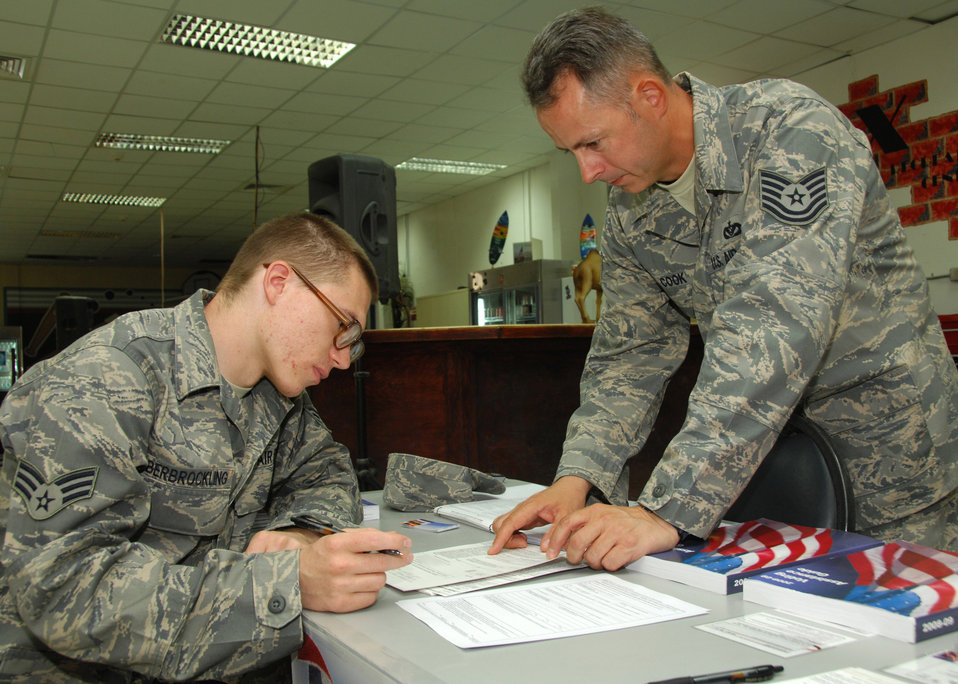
Every vote counts

Tech. Sgt. Michael Cook (right), 386th Expeditionary Civil Engineer Squadron voting assistance officer, helps Senior Airman Michael Oberbrockling register to vote Aug. 13 at an air base in Southwest Asia. Officials with the 386th Air Expeditionary Wing held a base-wide voter registration and absentee ballot drive to increase servicemember participation in November's general election. Sergeant Cook is deployed from Royal Air Force Lakenheath, United Kingdom. Airman Oberbrockling is deployed from Travis Air Force Base, Calif.